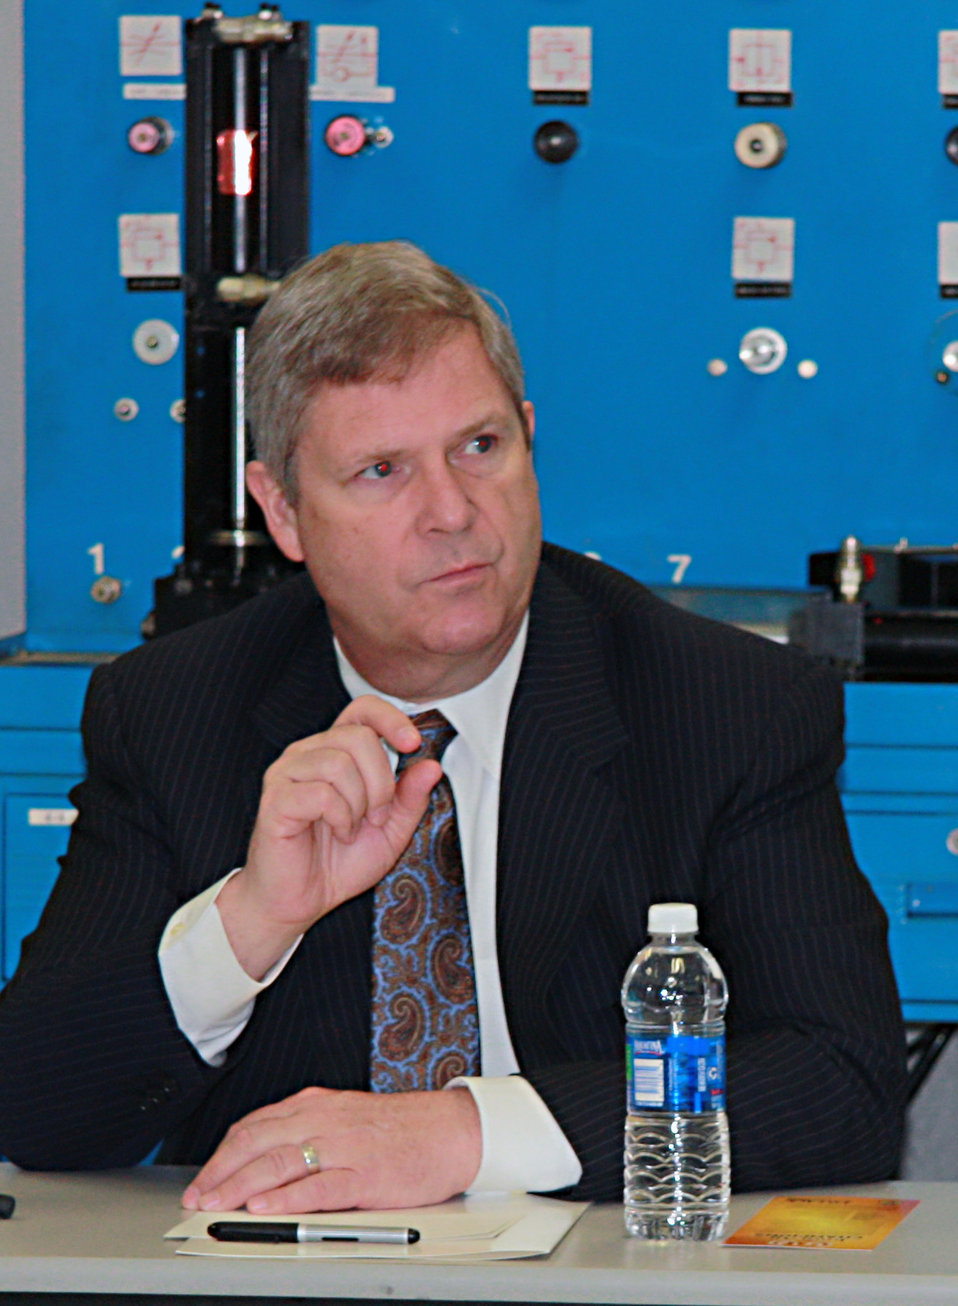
Agriculture Secretary Tom Vilsack hosted a roundtable with Iowa agriculture and business leaders as well as Des Moines Area Community College faculty and students to discuss President Obama’s efforts to strengthen the Iowa economy, on Friday, February 10, 2012 in Des Moines, IA.